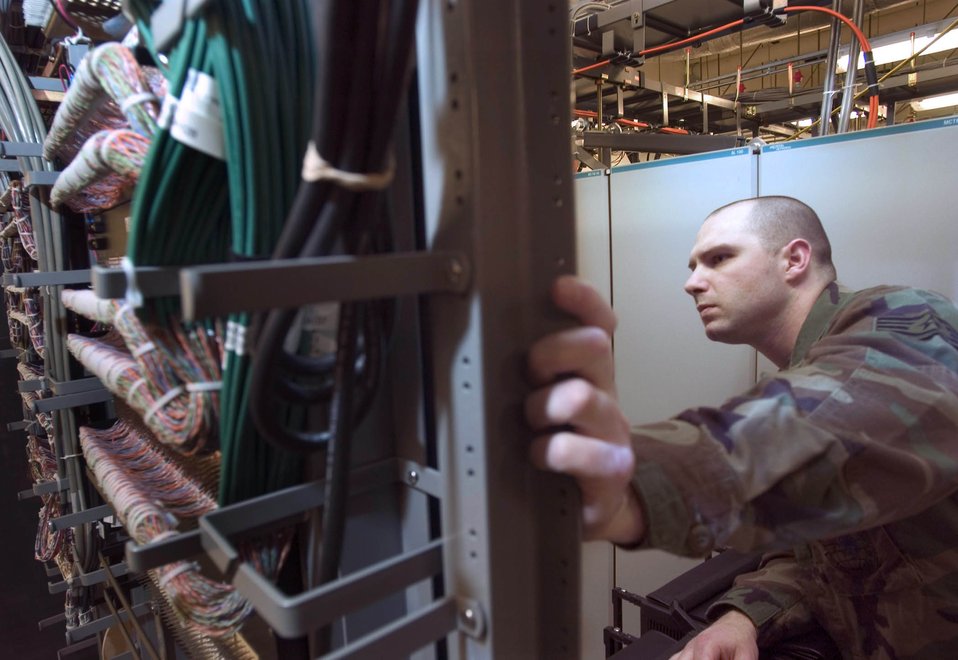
All wired up

AVIANO AIR BASE, Italy -- Staff Sgt. Adam Sowells ensures information will flow correctly through all of the thousands of wires connecting new hardware being installed here. He is a satellite wideband and telemetry maintainer assigned to the 1st Communications Maintenance Squadron at Kapaun Air Station, Germany. Sergeant Sowells is on temporary duty here to upgrade the optical network system.